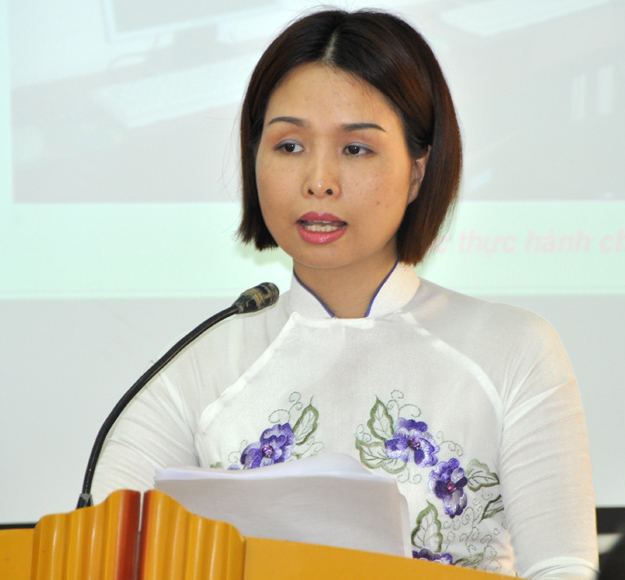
IT Graduation Ceremony in Hanoi